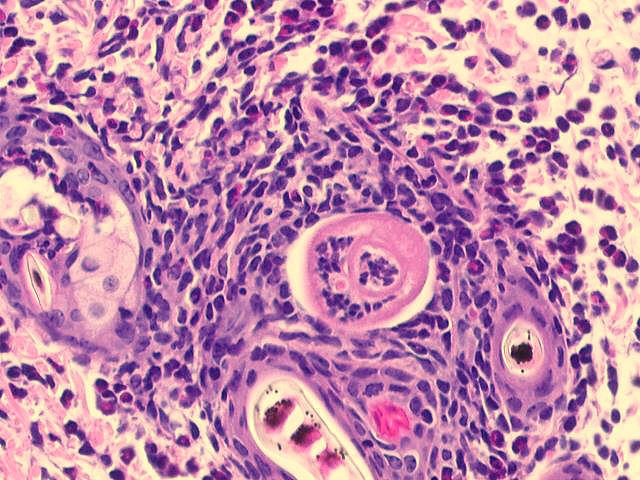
Schistosomulum in abdominal skin of a vaccinated mouse.